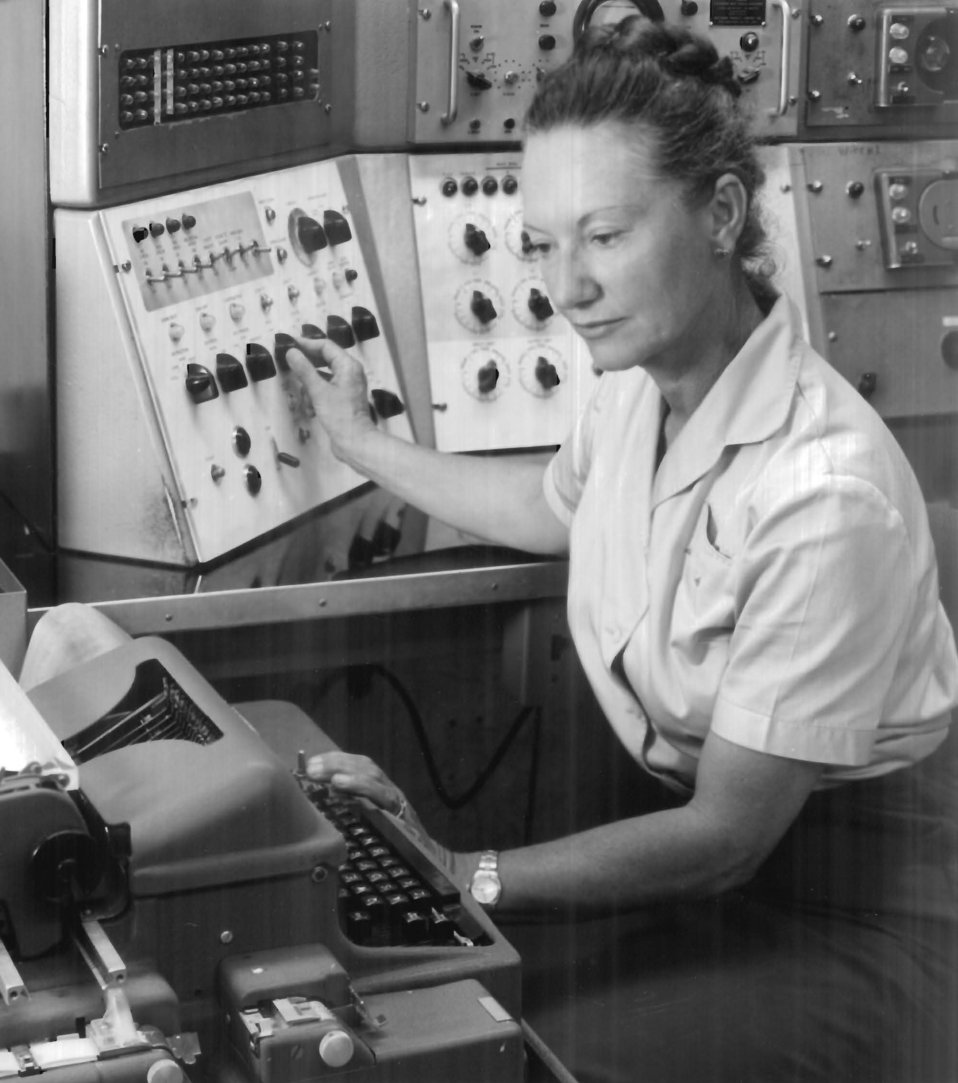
SEAC; History

Edith Marden, National Bureau of Standards (now the National Institute of Standards and Technology) computer programmer, operates the Standards Electronic Automatic Computer (SEAC) during the 1950s.